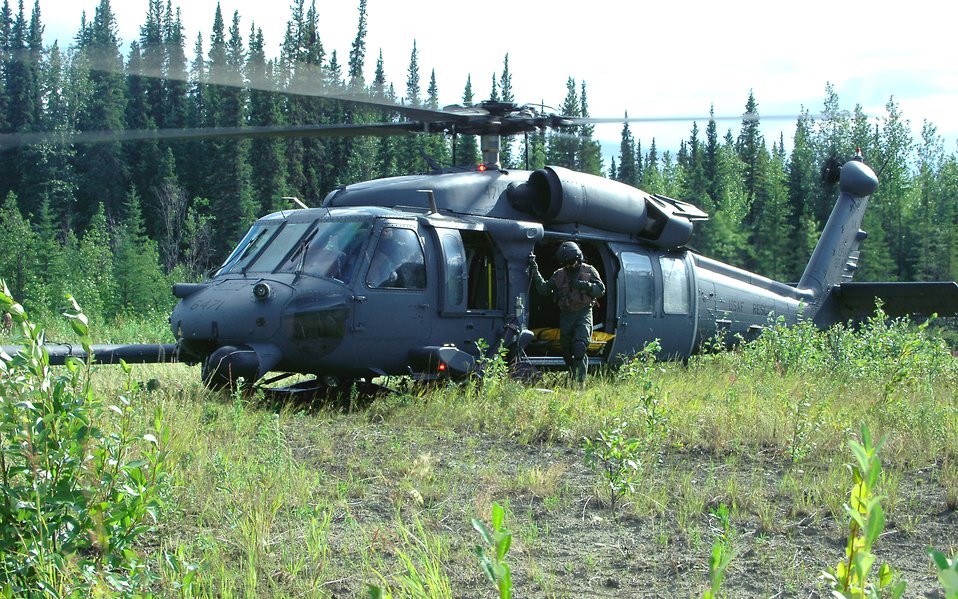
Combat Search and Rescue at Red Flag-Alaska

Staff Sgt. Corey Erconlani exits an HH-60 Pave Hawk in the midst of a combat search and rescue training scenario at Red Flag-Alaska 07-3, a multinational air combat training exercise held at the Pacific Alaska Range Complex. Sergeant Erconlani is assigned to the 210th Rescue Squadron from Kulis Air National Guard Base, Alaska.